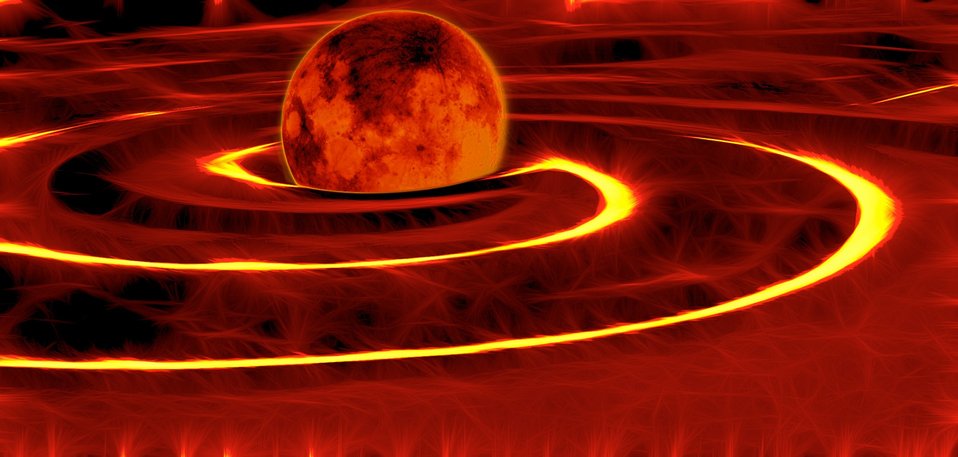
Planet

The planet from orbit.